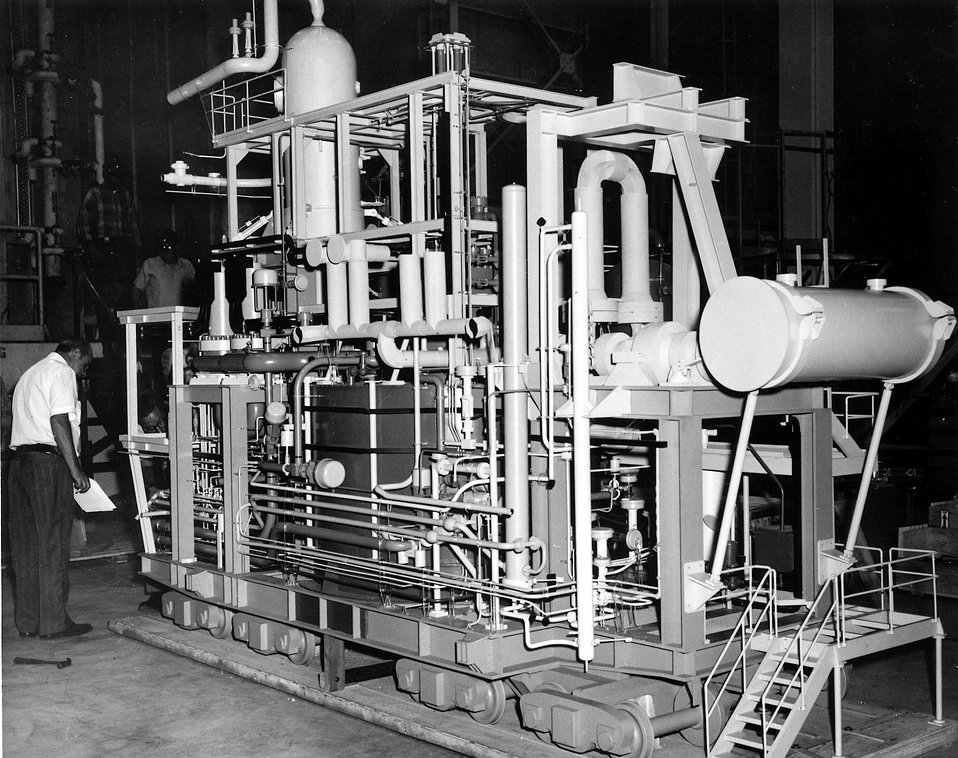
This quarter-scale model of the LOFT (Loss of Fluid Test) Mobile Test Assembly is assisting engineers and fabricators at the U.S. Atomic Energy Commission's National Reactor Testing Station. Circa 1973.